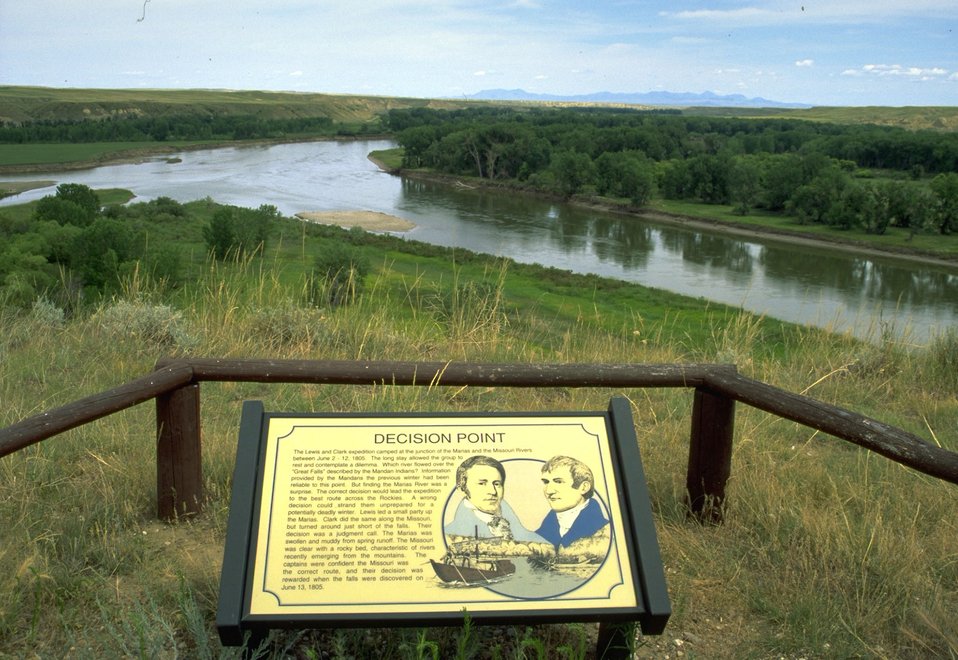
Missouri River with interpretive sign